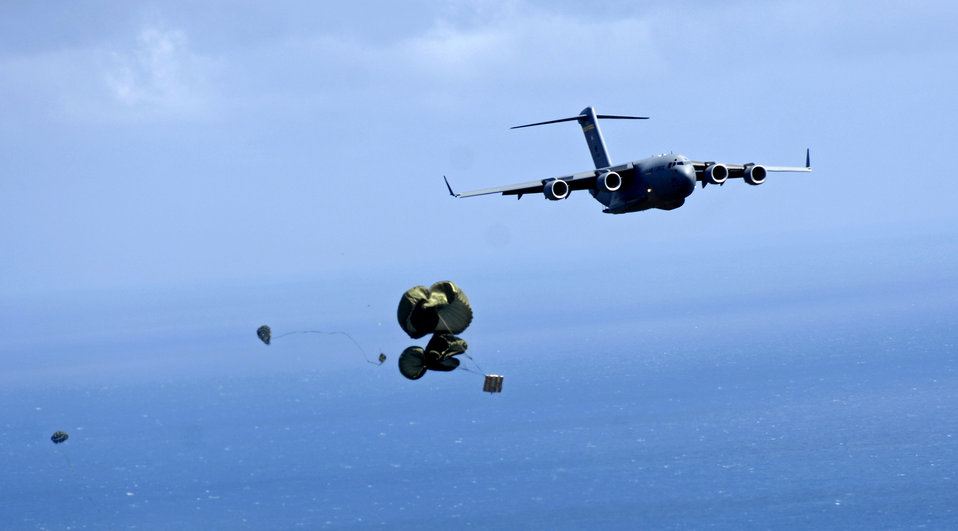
Hickam Airmen conduct 4-ship C-17 airdrop training

A C-17 Globemaster III releases a practice pallet during a four-ship, airdrop training mission Aug. 13 over the island of Oahu, Hawaii. The C-17 is assigned to the 535th Airlift Squadron from Hickam Air Force Base, Hawaii. 535th AS aircrews conducted the multi-element training to maintain currency and proficiency.